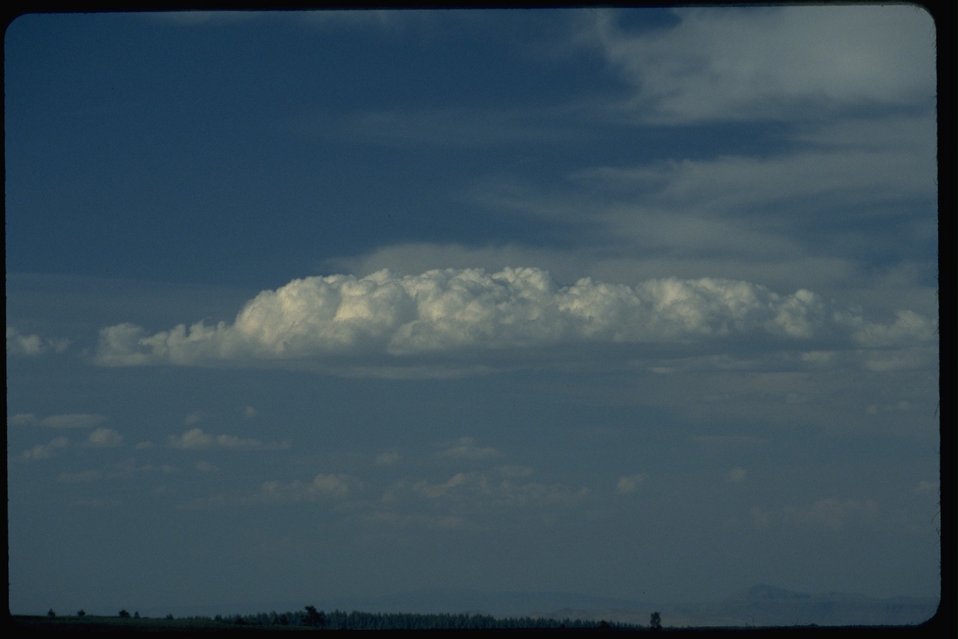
Cloud.